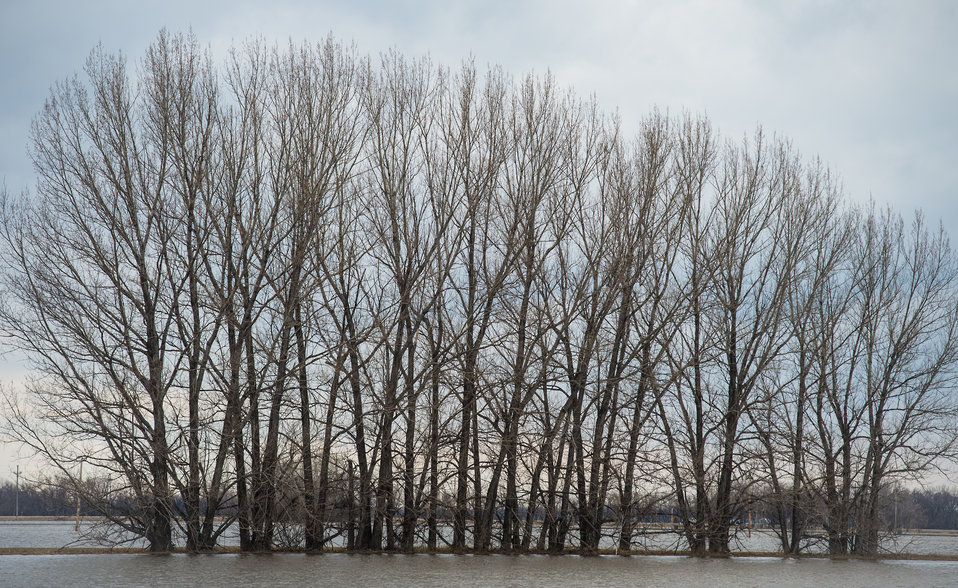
Trees that normally form windbreaks to reduce wind based soil erosion, now stand to define flooded farmsteads along the Red River and serve as dry perches for local birds in the Red River basin, of North Dakota, on Wednesday, May 1, 2013. To learn about the Red River Basin Initiative, see www.mn.nrcs.usda.gov/news/features13/RRBI.html.